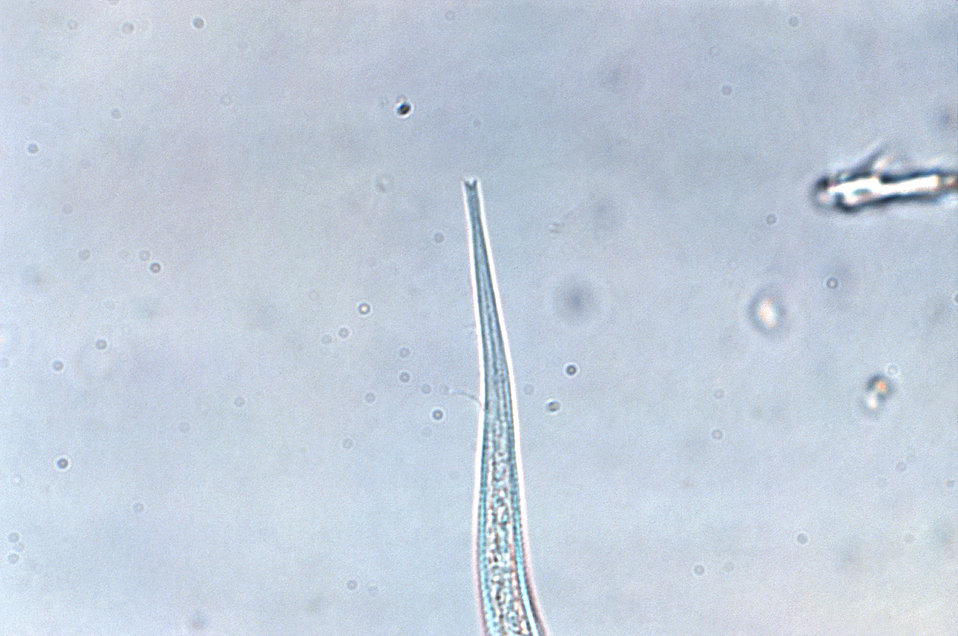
Under a magnification of 128X, this photomicrograph revealed the presence of a number of Strongyloides sp filariform larval-staged organisms. Infective, third-stage filariform larvae (L3) of Strongyloides stercoralis are up to 600�m long. As evidence here, the tail is notched, and the esophagus to intestine ratio is 1:1. Infective L3 larvae are found in soil and invade the human host by direct penetration of the skin. They may be found in respiratory specimens during cases of autoinfection.